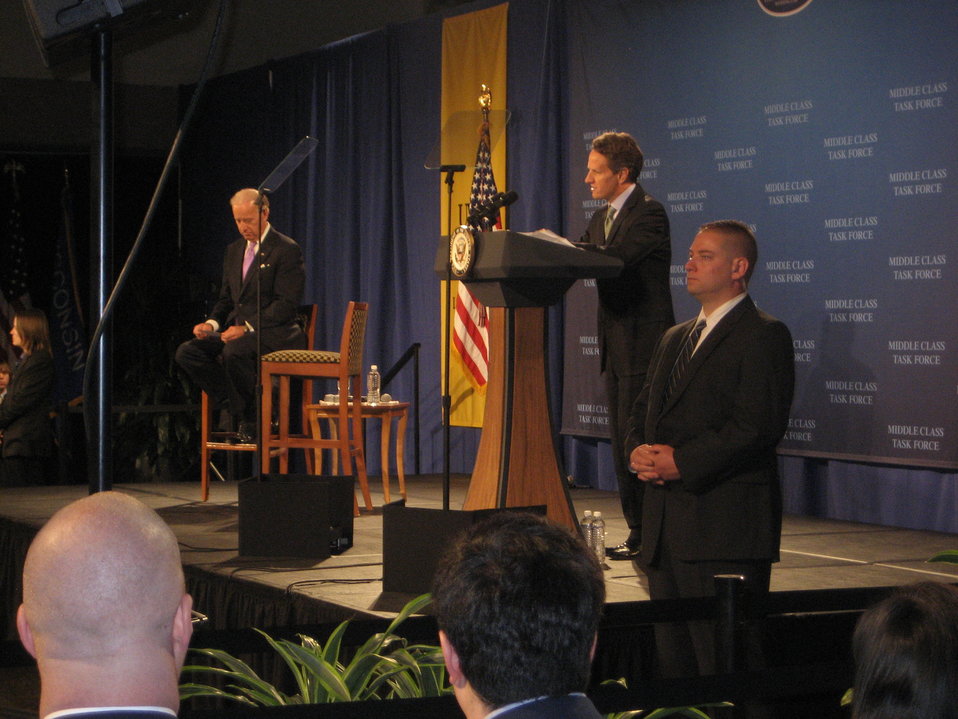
Meeting of the Middle Class Task Force, 4/27/2010

Secretary Geithner speaking about Wall Street reform at a Meeting of the Middle Class Task Force at the University of Wisconsin-Milwaukee Student Union on April 27, 2010.